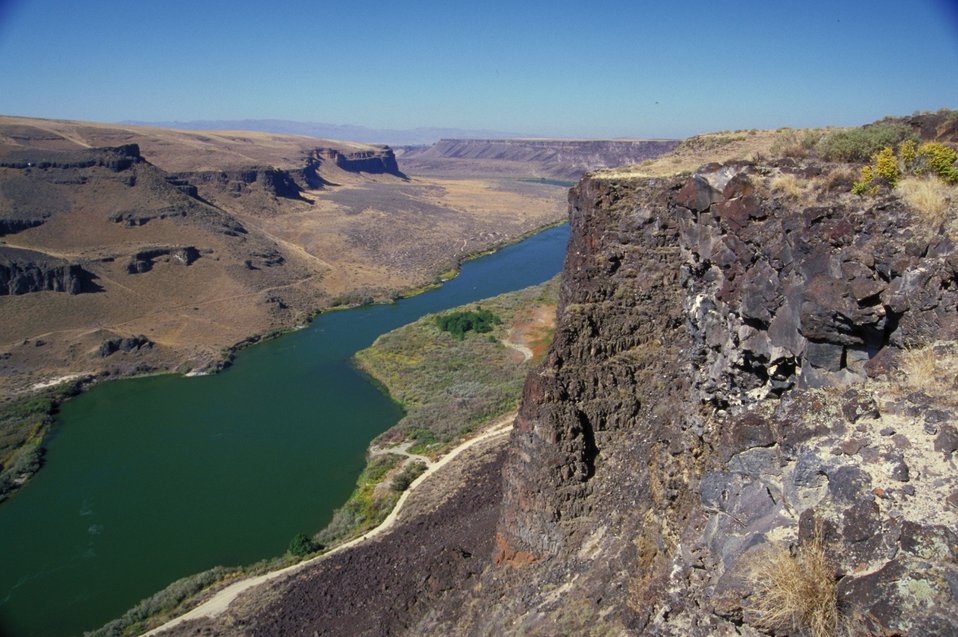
Snake River Birds of Prey National Conservation Area Scenic Four Rivers Field Office Lower Snake River District LSRD